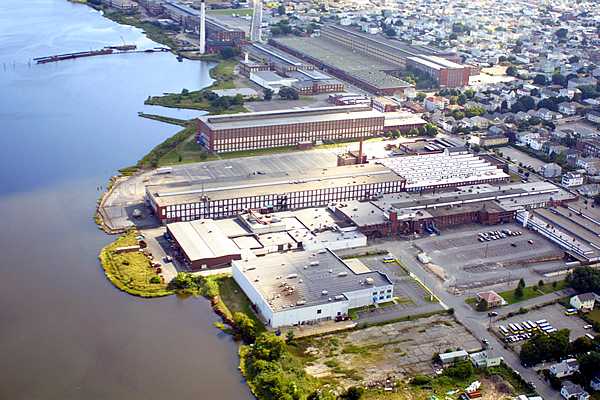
The Aerovox Mill, Upper New Bedford Harbor

This mill was one of two locations where the man-made PCB chemicals were used during the manufacturing of electrical components from approximately the 1940's through the 1970's.

While PCBs were not manufactured in these buildings, significant amounts were used and improperly disposed of during the production of electrical parts such as capacitors. Capicitors are used to hold or store electrical charge, and PCBs were a very stable, non flammable chemical to help the capacitors to do their job. Unfortunately, their chemical stability is the same reason why they are so persistent in the environment and have the ability to migrate through the food chain.

The manufacturing of PCBs was banned within the United States in the late 1970's.